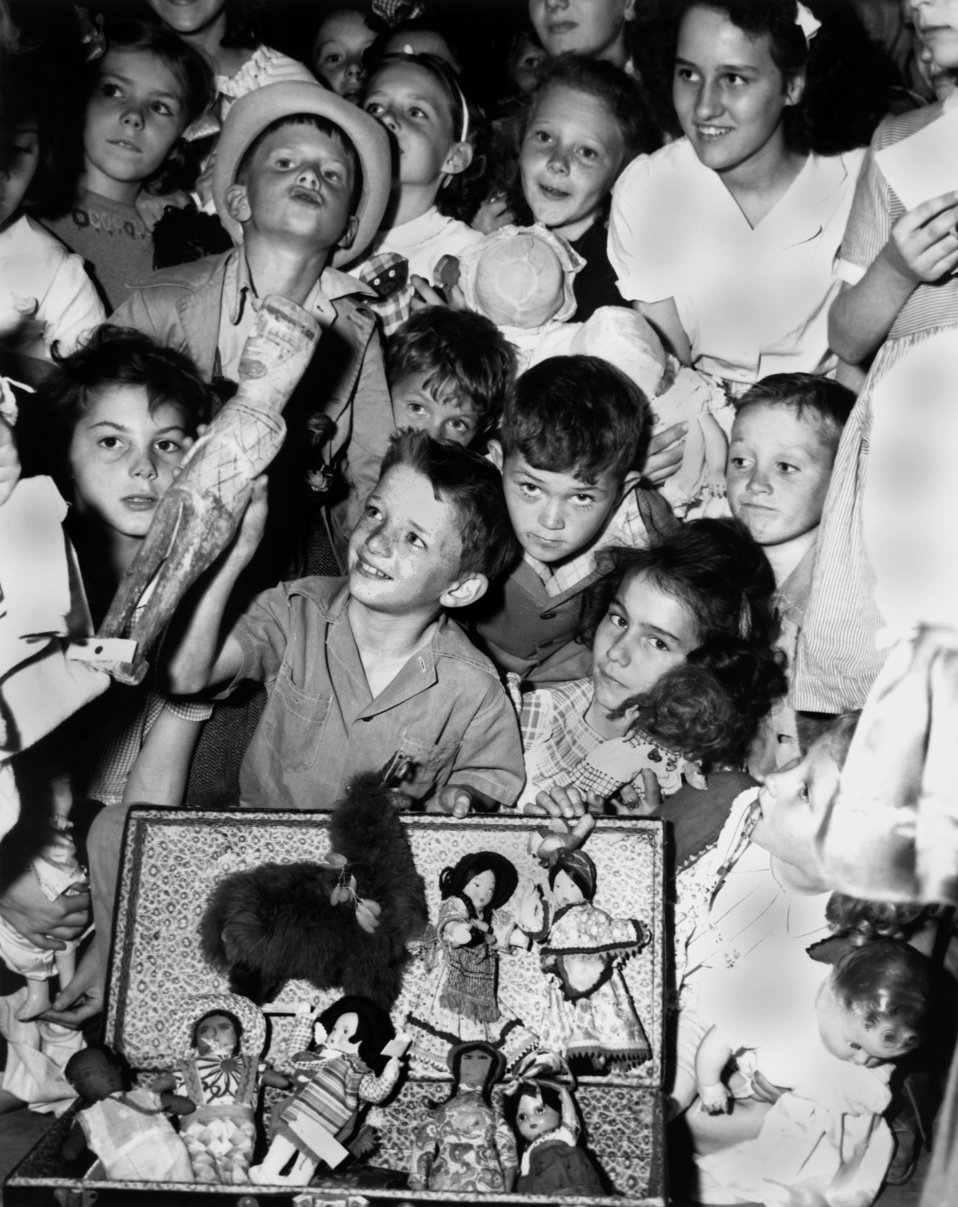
Doll show at Elm Grove Oak Ridge

PRO553-3 DOE photo by Ed Westcott

Doll show at Elm Grove Oak Ridge Tennessee 5/11/45